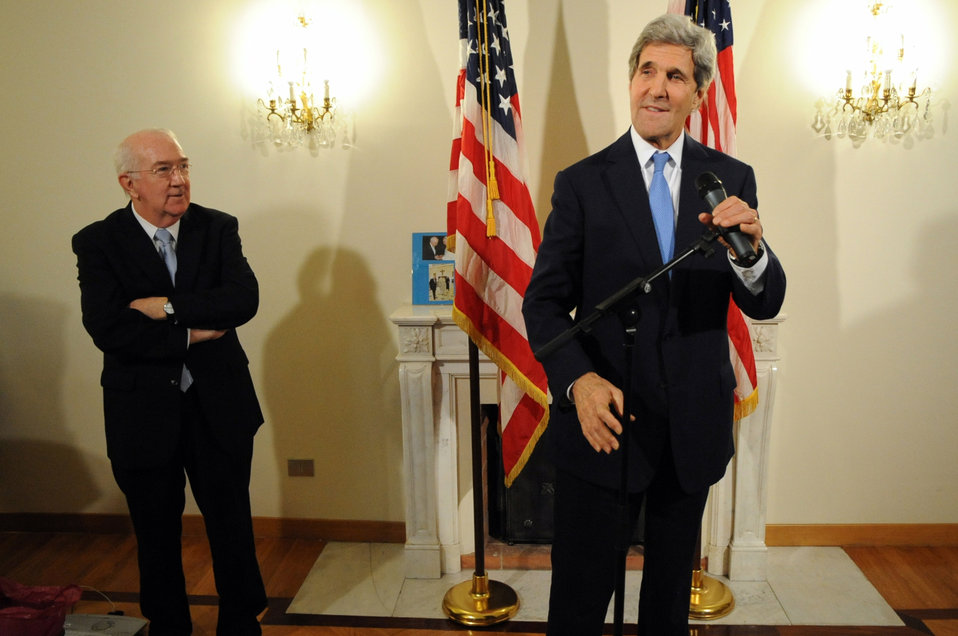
Secretary Kerry Discusses his Visit to the Vatican With the Press Corps

U.S. Secretary of State John Kerry, flanked by U.S. Ambassador to the Holy See Ken Hackett, adjusts the microphone before addressing his traveling press corps at the Chief of Mission Residence amid a visit to Vatican City and Rome, Italy, on January 14, 2014.